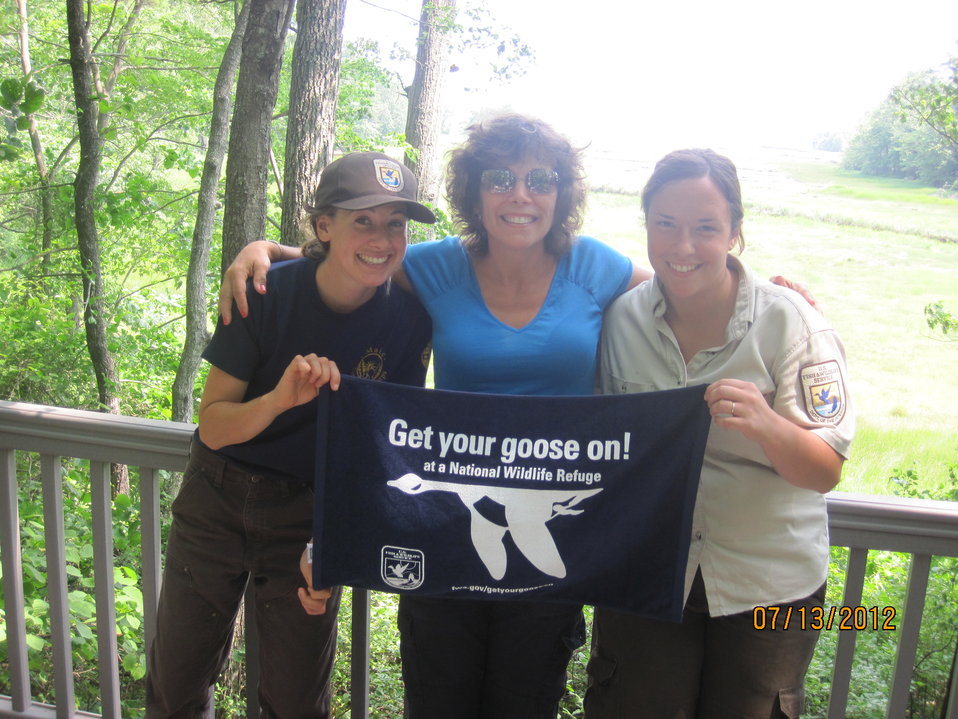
Get Your Goose On!

Americorps flies the blue goose.

Photo Credit: bri Rudinsky/USFWS